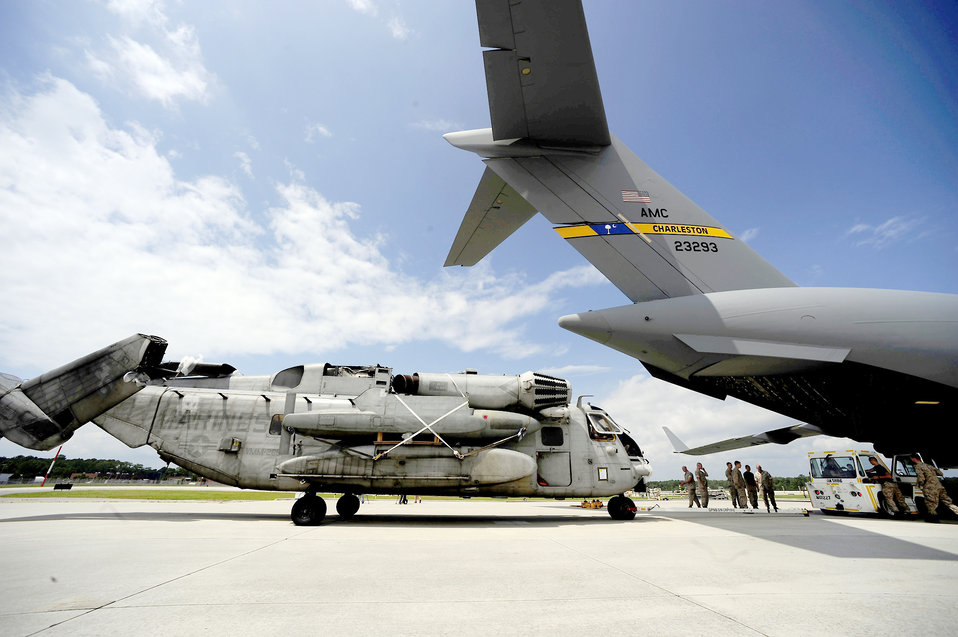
Pakistan flood relief effort

Airmen and Marines move a CH-53E Super Stallion onto a C-17 Globemaster III August 20, 2010, at Marine Corps Air Station Cherry Point, N.C. The helicopter is one of four that will be used to supplement U.S. military rescue and relief efforts in the flood-affected areas of Pakistan.